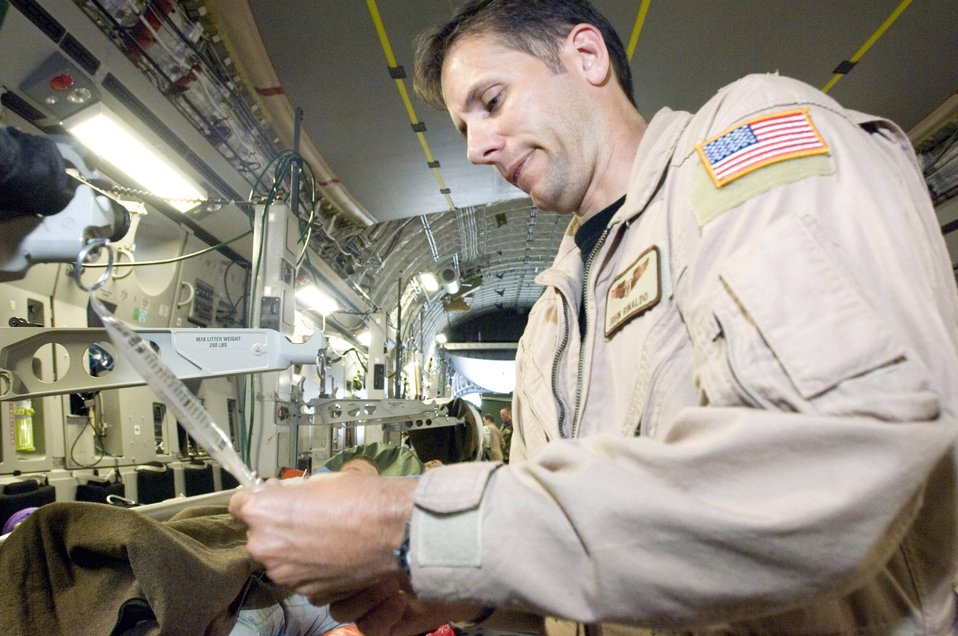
Aeromedical evacuation mission

First Lt. John Rinaldo prepares to administer medicine during an aeromedical evacuation mission Sept. 18 aboard a C-17 Globemaster III. Lieutenant Rinaldo is a flight nurse serving temporary duty with the 791st Expeditionary Aeromedical Evacuation Squadron at Ramstein Air Base, Germany.